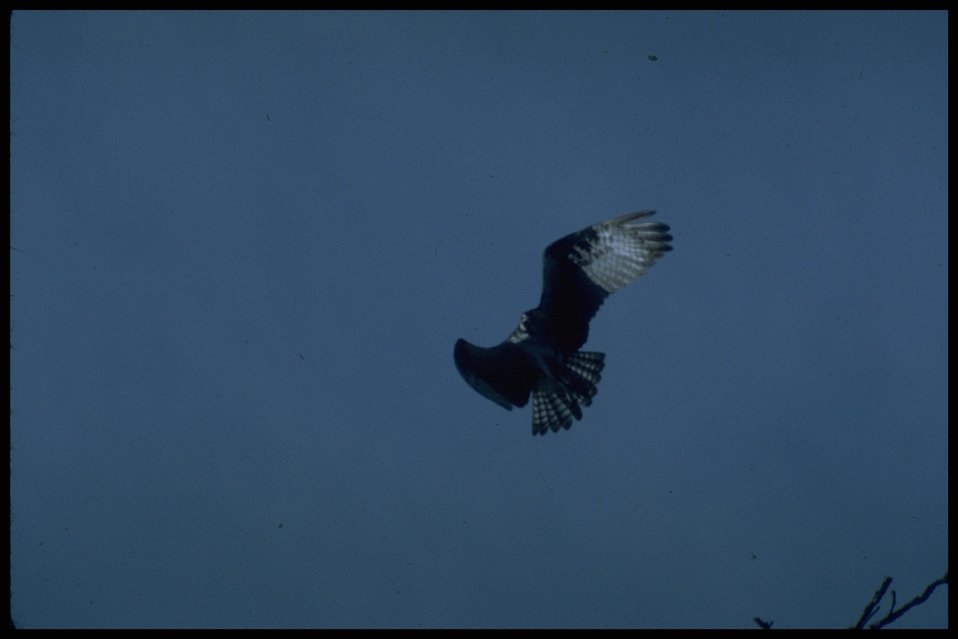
Far shot of Osprey in flight, Lakeview District.